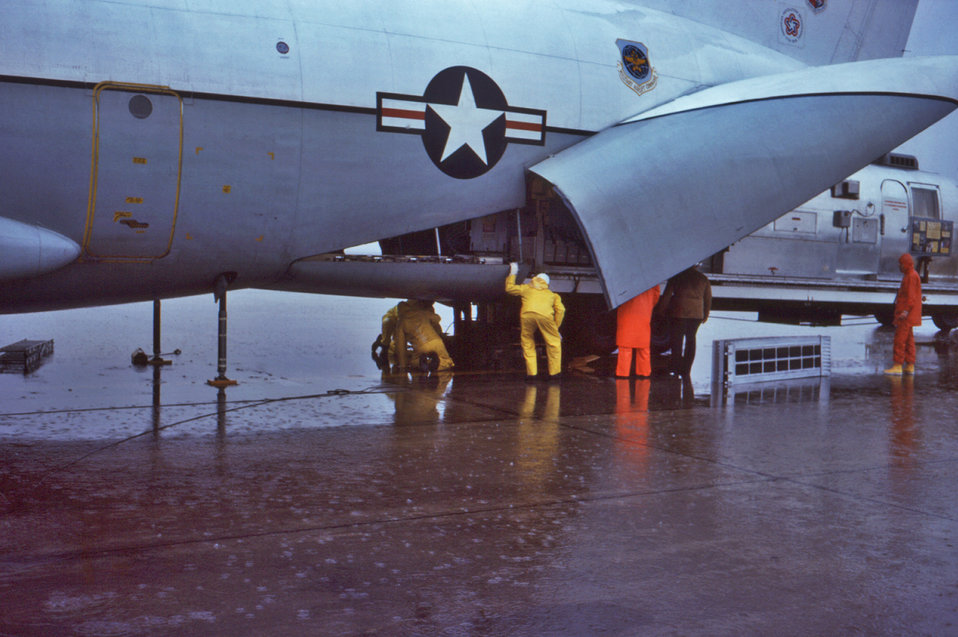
This 1976 photograph showed several loadmasters, as they were loading the CDC's mobile quarantine facility (MQF), into an aircraft to be transported to Atlanta, Georgia.